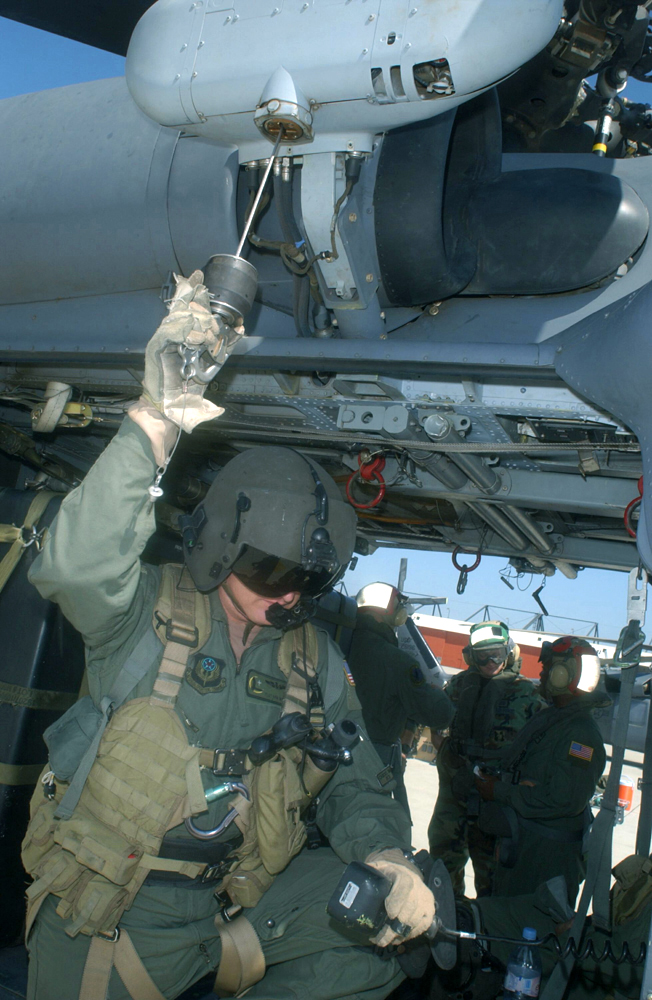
A 'chopper' landing

SAN DIEGO -- Tech. Sgt. Ron Merle inspects the hoist used to help pararescuemen and those they save into a rescue helicopter. This HH-60G Pave Hawk is being prepared for water landings on board a Navy ship near here as part of water-rescue training for 55th Rescue Squadron HH-60G crews based at Davis-Monthan Air Force Base, Ariz. Sergeant Mercer is a crew chief.